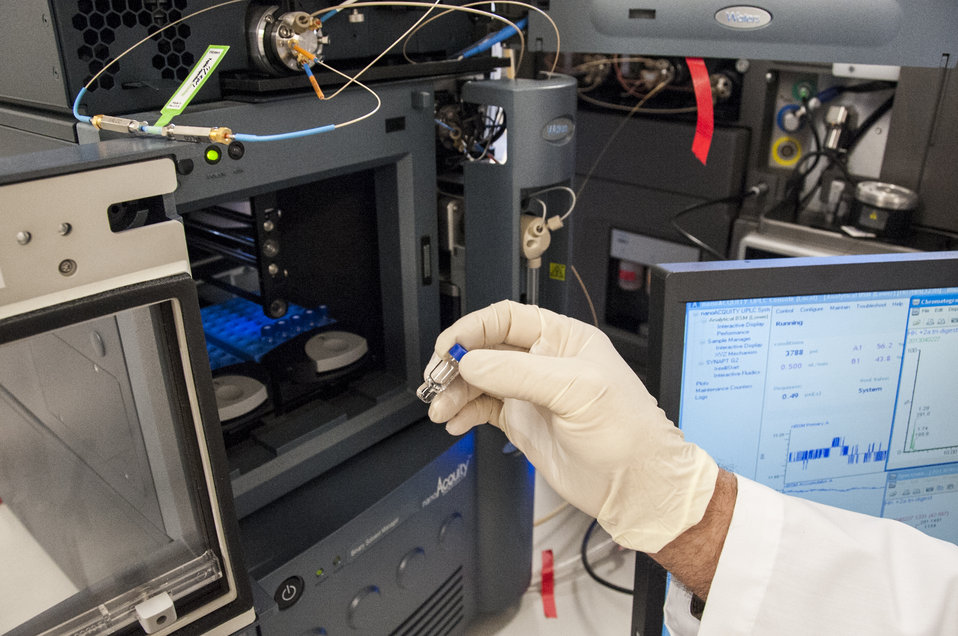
Bio Threats: FDA's A-Team (6304)

Senior staff scientist John F. Cipollo, Ph.D., and analytical chemist Yanming An, Ph.D., use mass spectrometry technology to analyze glycoconjugates— carbohydrates bonded to either a fat molecule or a protein. They’ve proven valuable in vaccines used to treat meningitis, pneumonia and blood infections. The scientists hope to discover molecules that will lead to the development of new vaccines.

Scientists at FDA’s Center for Biologics Evaluation and Research (CBER) work to facilitate the development of safe, effective treatments that would neutralize biological threats to public health and security. CBER regulates preventive and therapeutic vaccines, blood and blood products, human cell and tissue-based products, gene therapies and xenotransplantation. To learn more, read this FDA Consumer Update:

• FDA Teams Prepare for Biological Threats